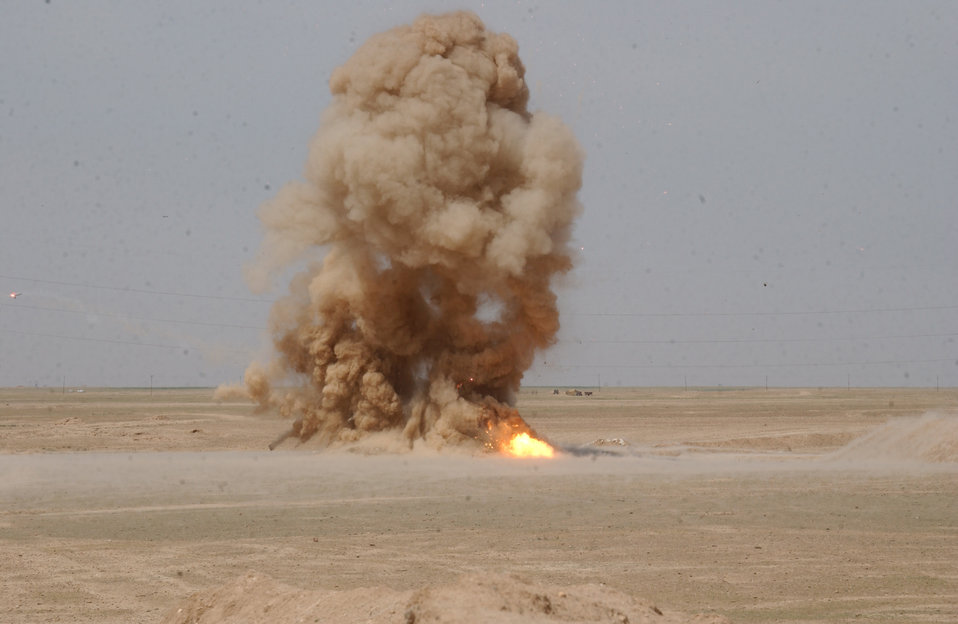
BOOM!

TIKRIT AIRFIELD, Iraq -- Explosive ordnance disposal Airmen and U.S. Army Soldiers detonate unexploded ordnance that was found here April 13.